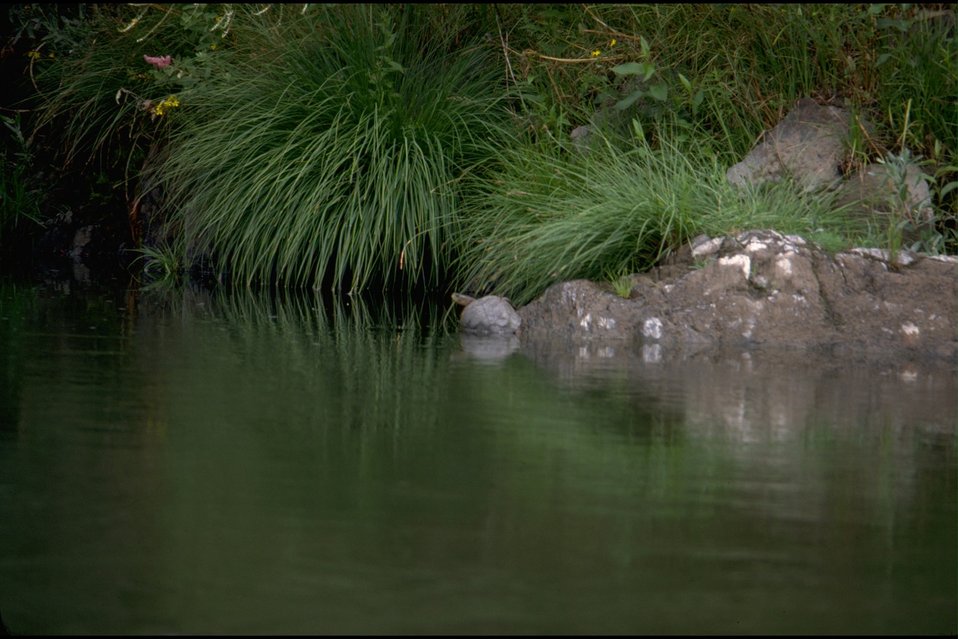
Rogue River - Western Pong Turtle.